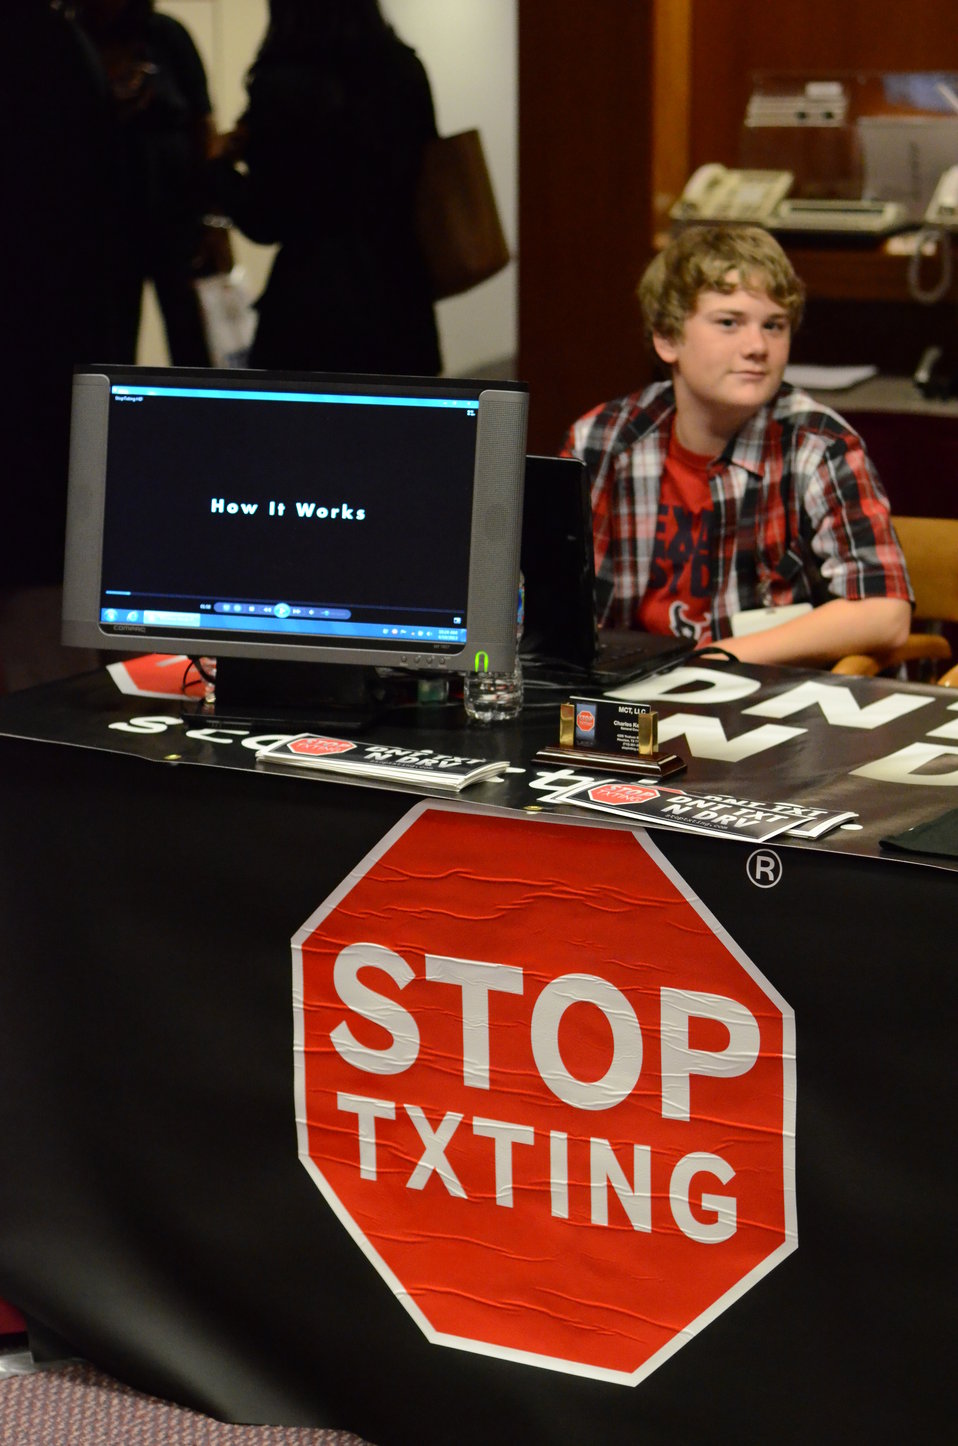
Distracted Driving Technology Showcase April 19, 2013